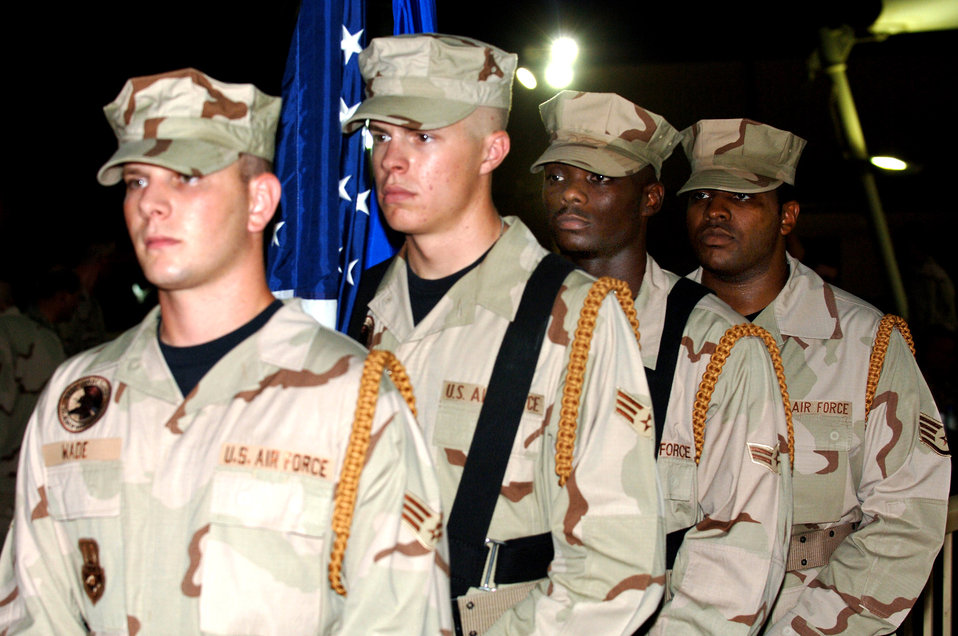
In celebration of the 60th anniversary

Members of the 379th Air Expeditionary Wing Honor Guard stand ready to present the colors during a dining-in celebrating the Air Force's 60th anniversary Sept. 18.